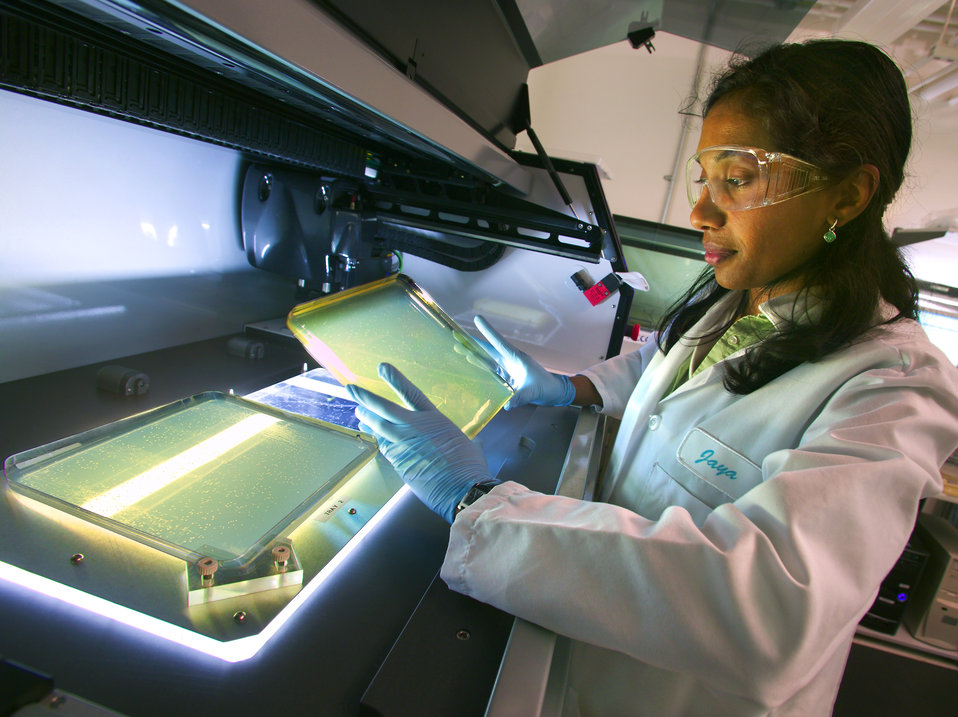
Jayadevi Krishnakumar at Joint Genome Institute Genetix Qpix Colony Picker.

Researchers are trying to sequence the three billion paired units that comprise the human genome, the genetic code that is crucial to understanding human development and countless human diseased with genetic roots. The JGI, founded in 1961, is a consortium of scientists from DOE's LBNL, LLNL, and LANL, working on the largest biological undertaking in history, which promises untold opportunities to understand the basic molecular underpinning of life and to improve human health.